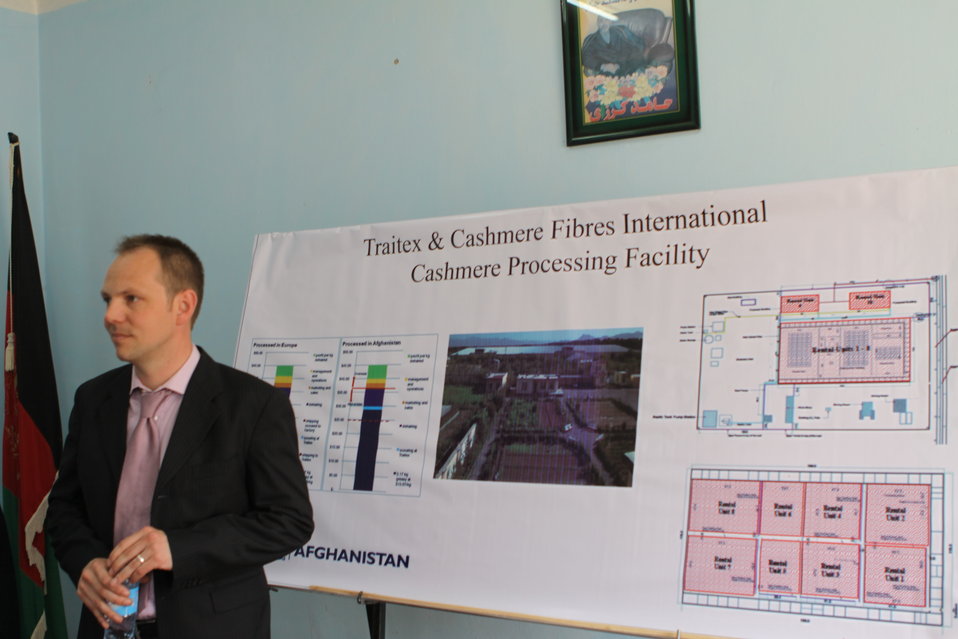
100525 Hirat Textile Company 719